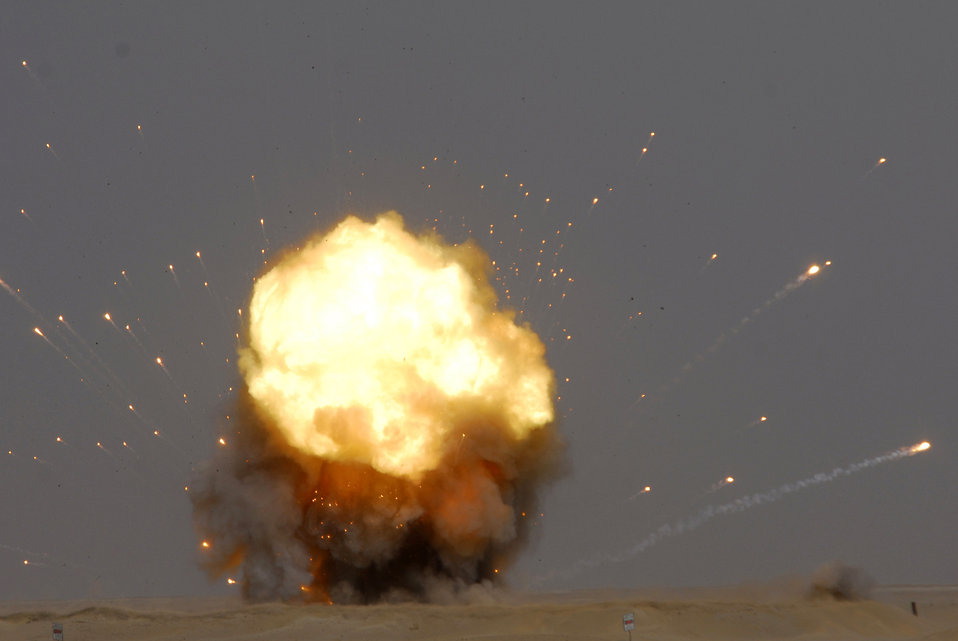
Americans, Australians go out with a bang

A fireball rises into the sky during a controlled detonation performed by coalition forces from the Air Force's 386th Expeditionary Civil Engineer Squadron and the Australian army June 20 at an explosive ordnance disposal range in Southwest Asia. The joint detonation also provided an opportunity for the U.S. and coalition forces to enhance their relations while learning some of the slight differences in operating procedures.